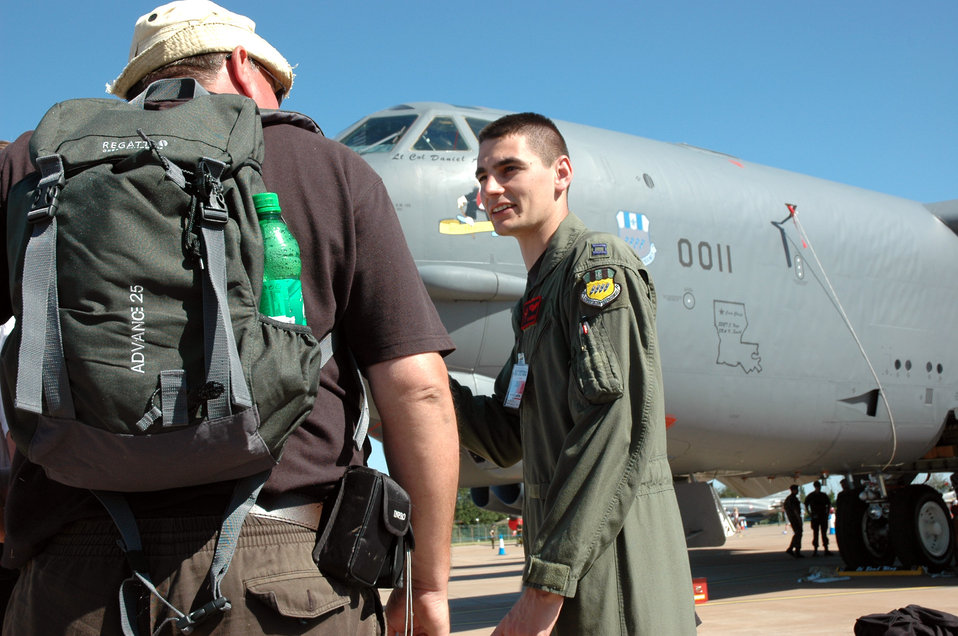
Air Force big hit at big show

Capt. Brett Clutter chats with Colin MacKenzie during the Royal International Air Tattoo at Royal Air Force Fairford, England, on Saturday, July 15. Captain Clutter is an instructor pilot with the 96th Bomb Squadron from Barksdale Air Force Base, La., and Mr. MacKenzie was attending the two-day air show from his home in Norwich, England.